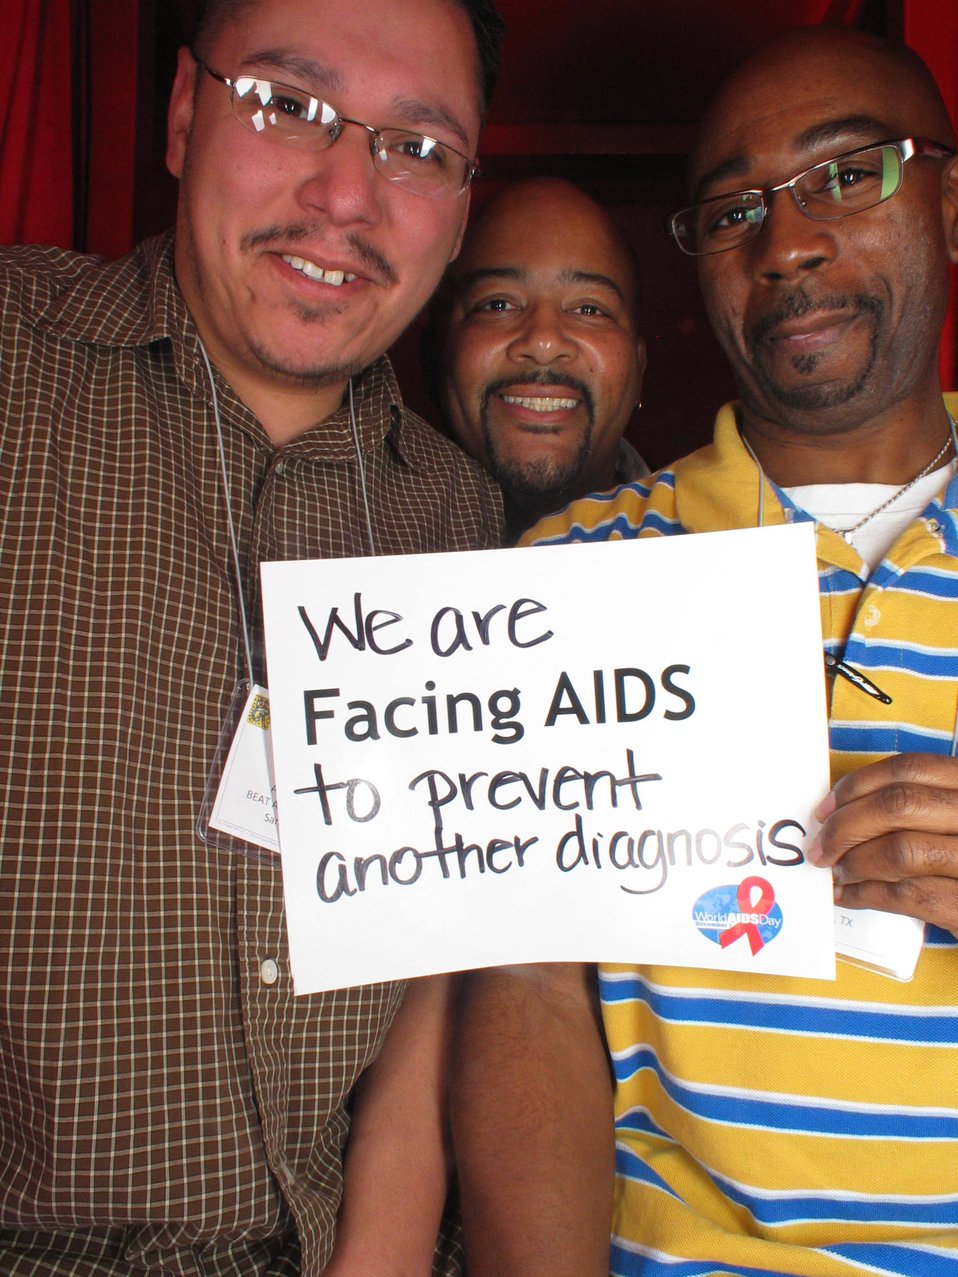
We are Facing AIDS to prevent another diagnosis